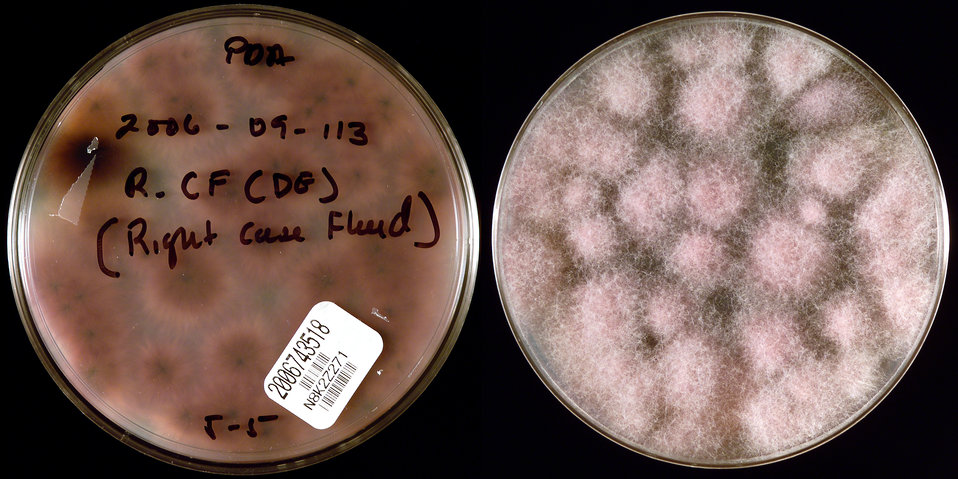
As in PHIL # 8974, this image depicted two sides of a Petri dish, which had been inoculated with a specimens retrieved from the fluid from the inside of the right side of a contact lens case, from a Minnesota Fusarium keratitis-patient, and had subsequently grown a filamentous colony of Fusarium fujikuroi species complex [FFSC] fungal organisms. The type of agar medium in the case of this specimen was Sabouraud Dextrose (SAB). While it is not unusual for Fusarium to cause keratitis, it was the number of affected individuals, which had increased dramatically, predominantly in persons wearing contact lenses, that had warranted this epidemiologic study. The laboratory received cultures which came from two sources: Fusarium spp. isolated from the eyes of patients with fungal keratitis, and cultures from contact lenses, cases and/or lens solution.